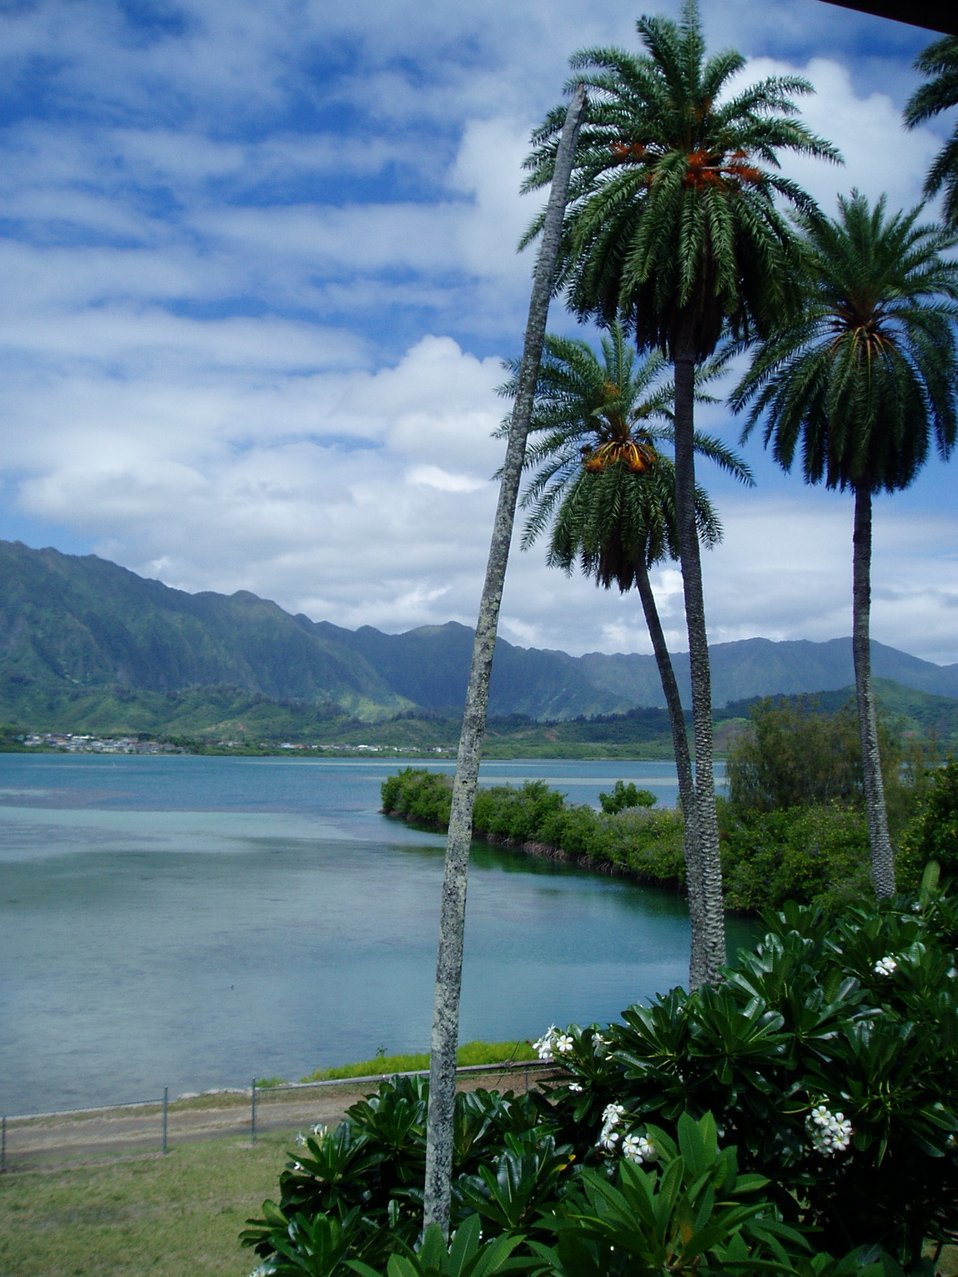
Palm trees, flowers, mountains, and a stand of mangrove in a placid bay.